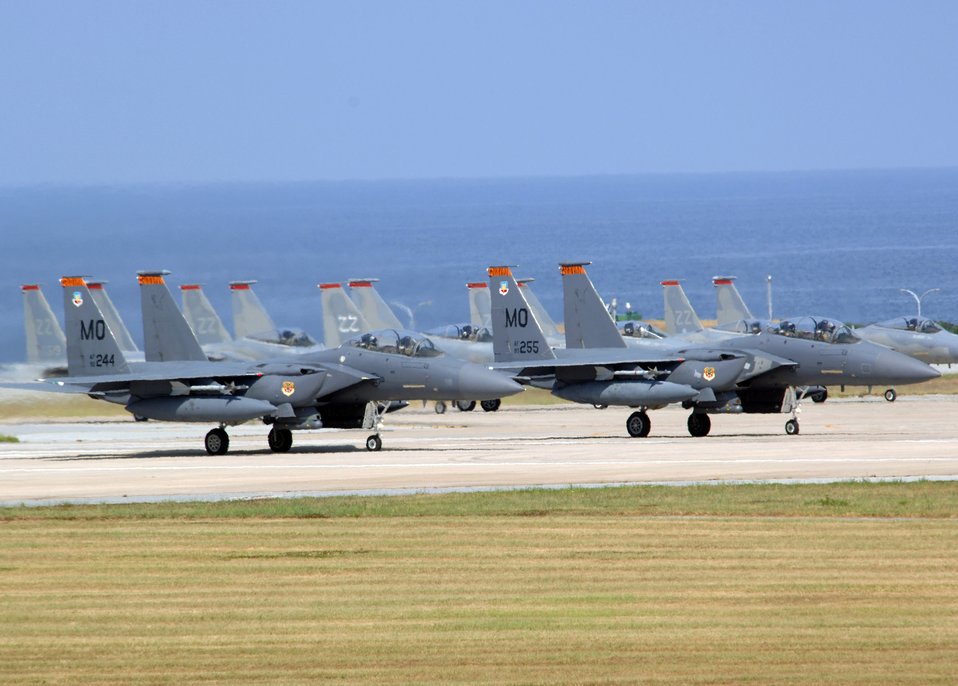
Airmen support PACAF operations while deployed

KADENA AIR BASE, Japan -- F-15E Strike Eagles with the 391st Expeditionary Fighter Squadron deployed from Mountain Home Air Force Base, Idaho, and 18th Wing here prepare to take off for a training mission. About 300 Airmen from Mountain Home are here supporting U.S. Pacific Command operations as part of an air and space expeditionary force tasking.